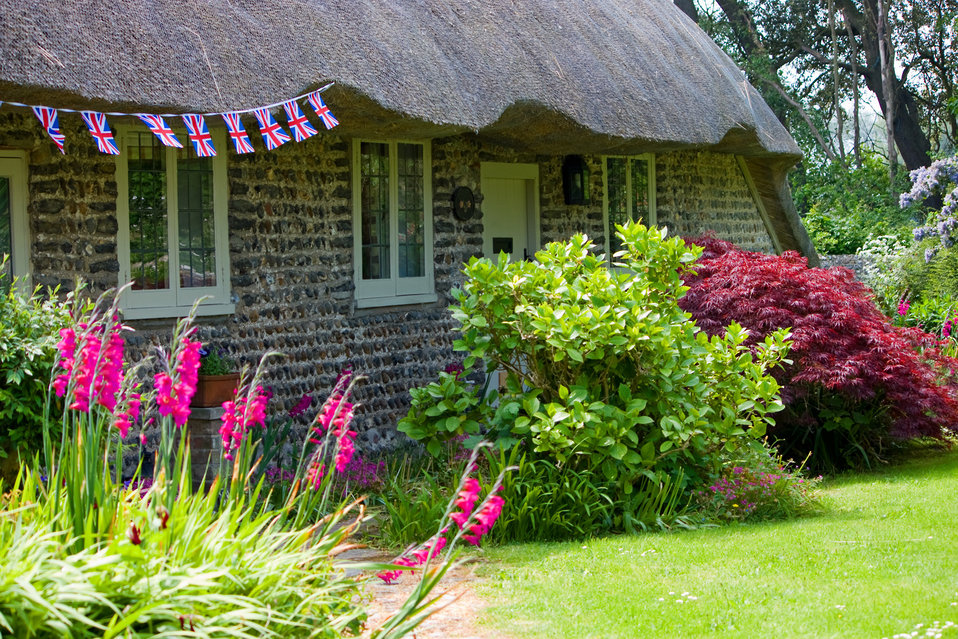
Thatched cottage & garden

Beautiful country thatched cottage and garden.